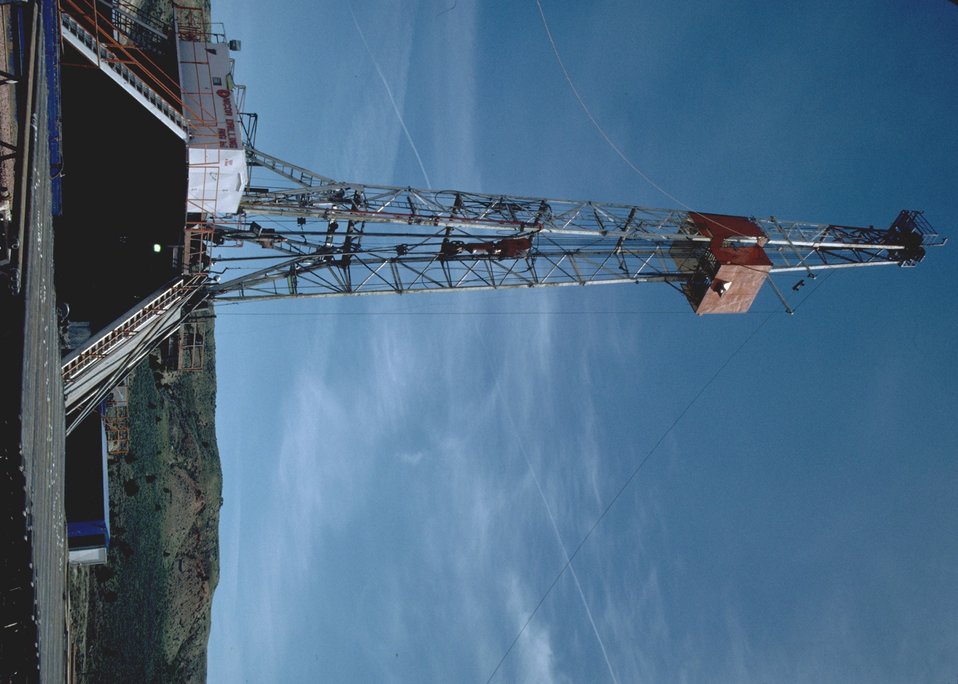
Deep well rig.